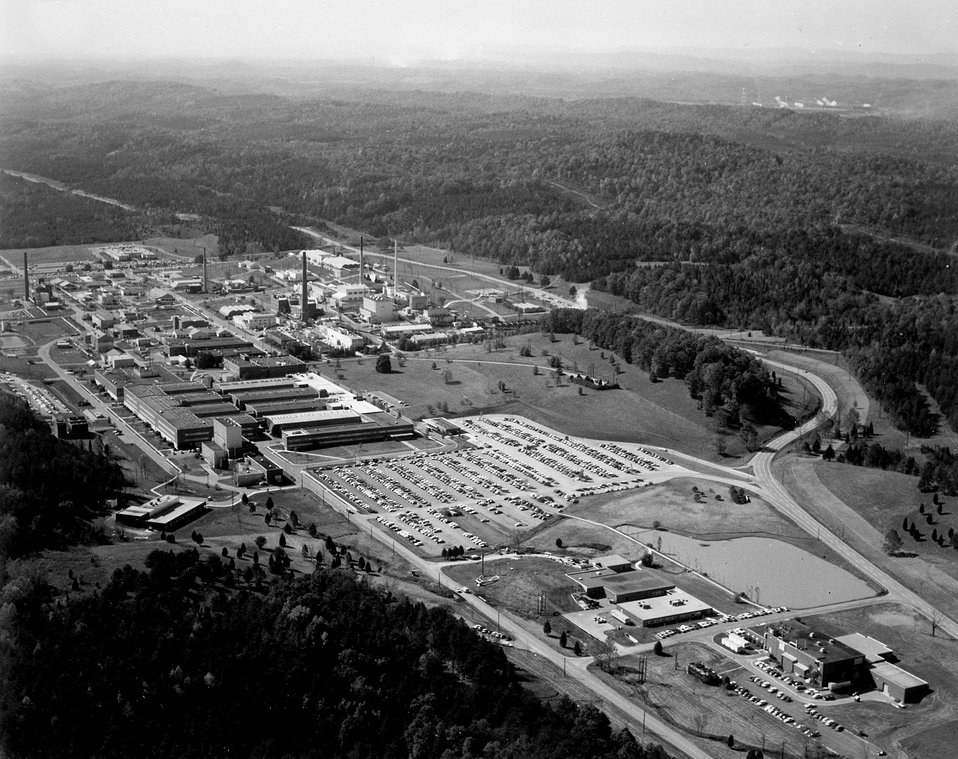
An aerial view of Oak Ridge National Laboratory, Oak Ridge, Tennessee, one of the Atomic Energy Commission's largest research and development installations. c. 1972